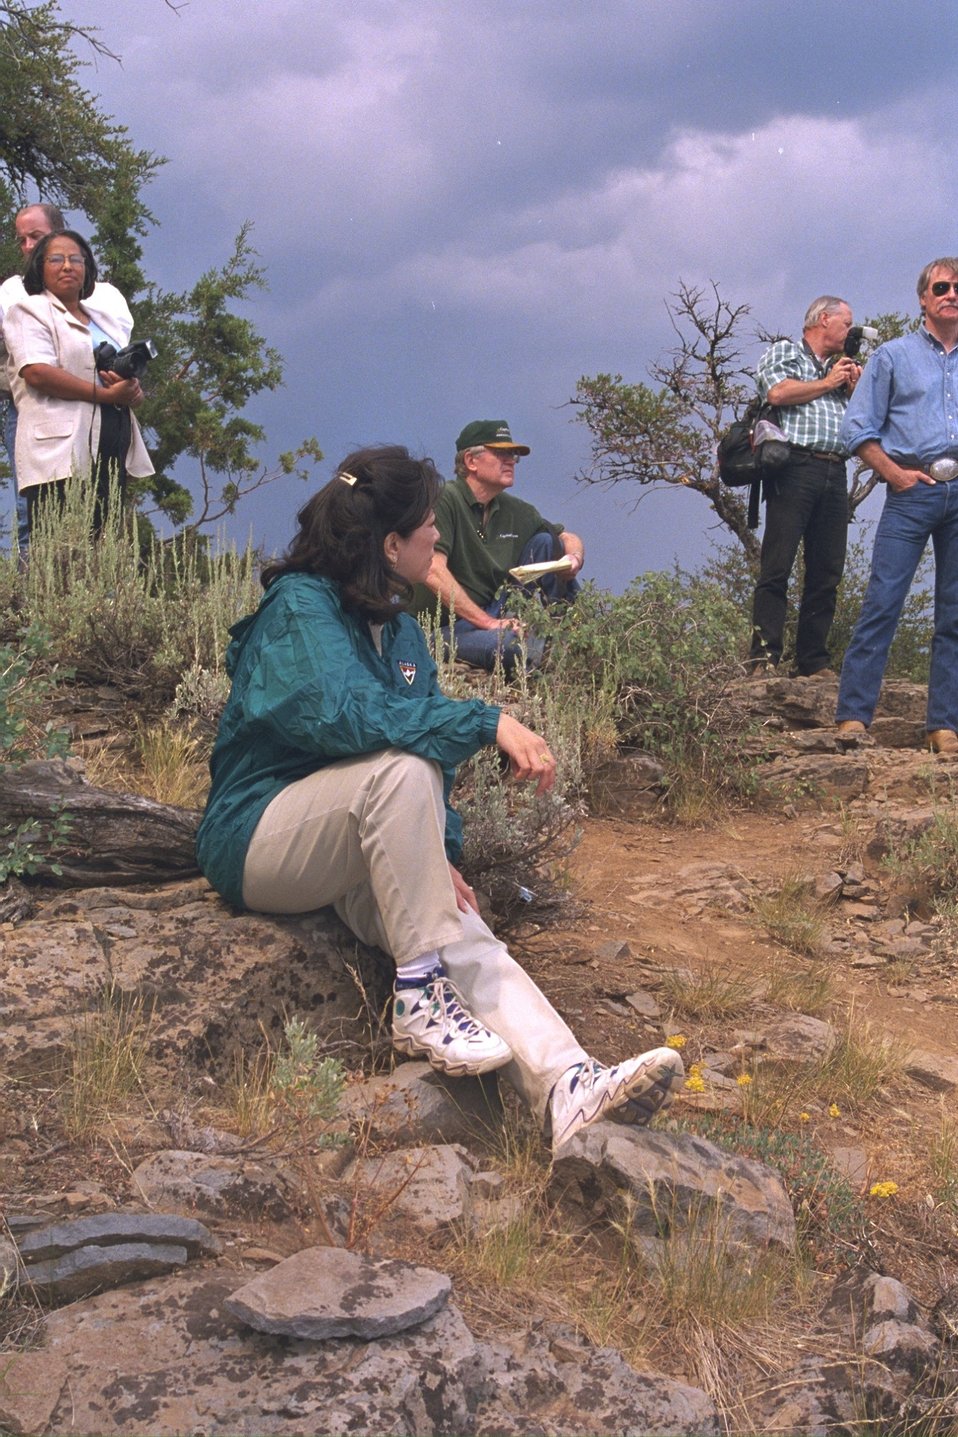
Secretary Babbitt/Governor Kitzhaber delegation addressing designation of Steens Mountain at Big Indian overlook, with Sylvia Baca in the foreground.